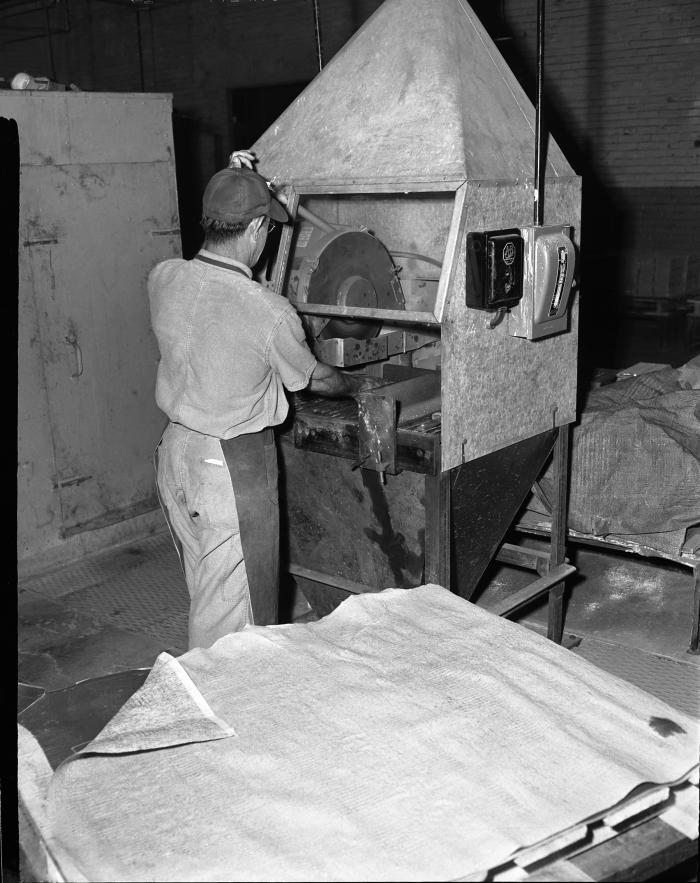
This May 1, 1953 photograph was provided by the Center for Disease Control's (CDC), National Institute for Occupational Safety and Health (NIOSH). The image depicted an industrial plant employee in an electric-storage battery plant, who was at the time, cutting the lugs off lead battery plates. Note that the worker was using personal protective equipment, consisting of a cap, minimal eye protection, and coveralls at his work station. The machine itself was equipped with a ventilator, attached in order to reduce exposure to lead dust that could easily be inhaled.Workers can be exposed to lead through inhalation of fumes and dusts, as well as through ingestion as a result of lead-contaminated hands, food, drinks, cosmetics, tobacco products, and clothing. Furthermore, workers can take lead home on their clothes, skin, hair, tools, and in their vehicles, potentially exposing their families to this element's harmful health effects.